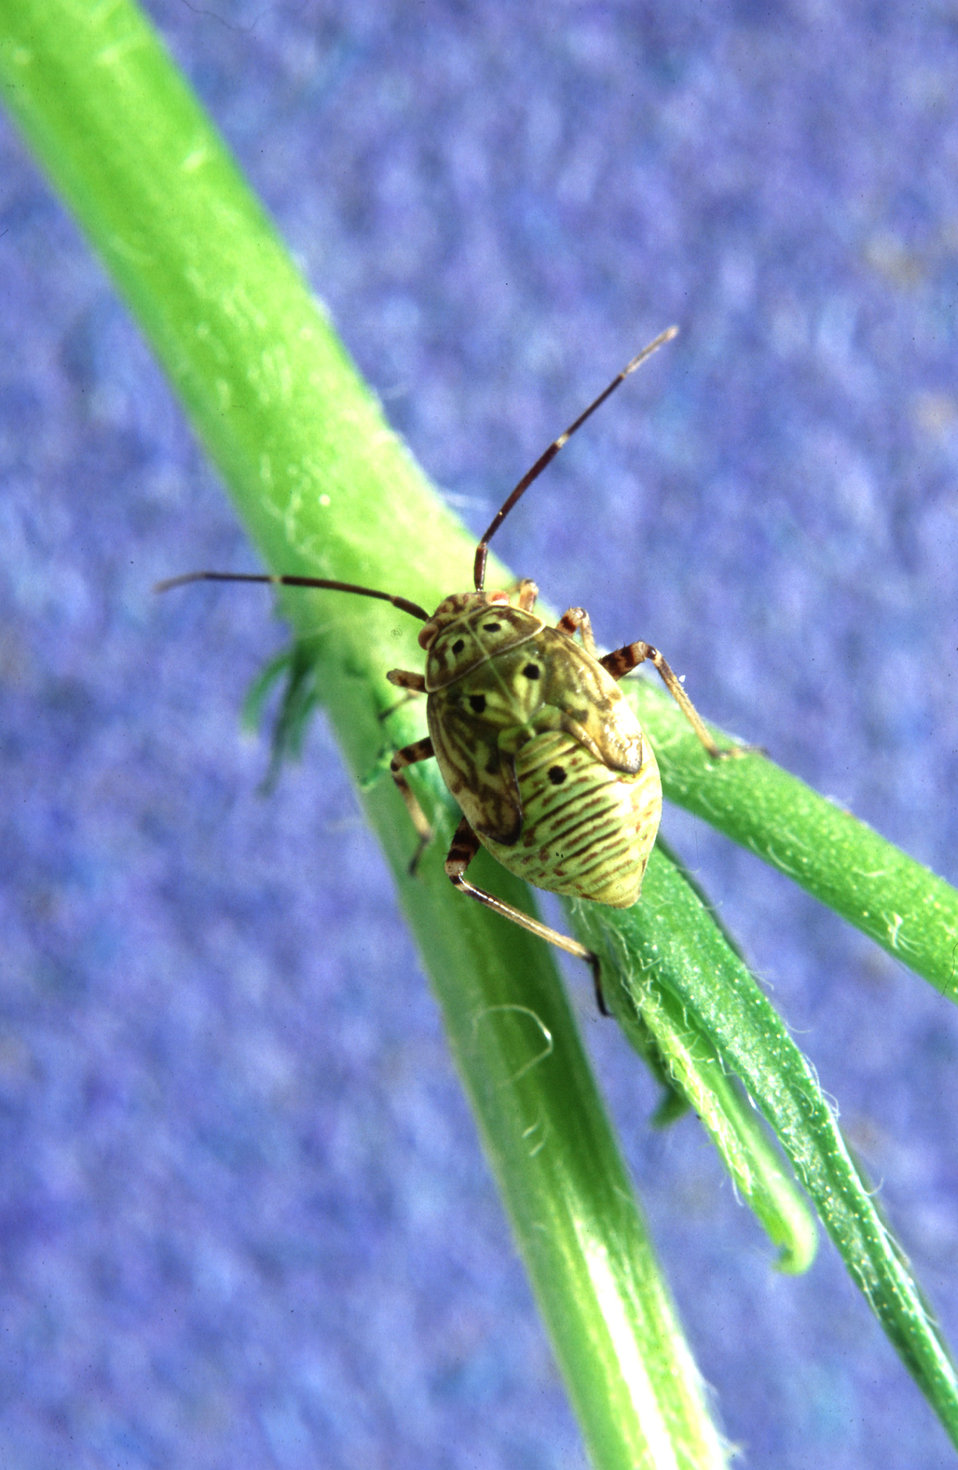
The tarnished plant bug is reared in the lab as a factory for parasites.